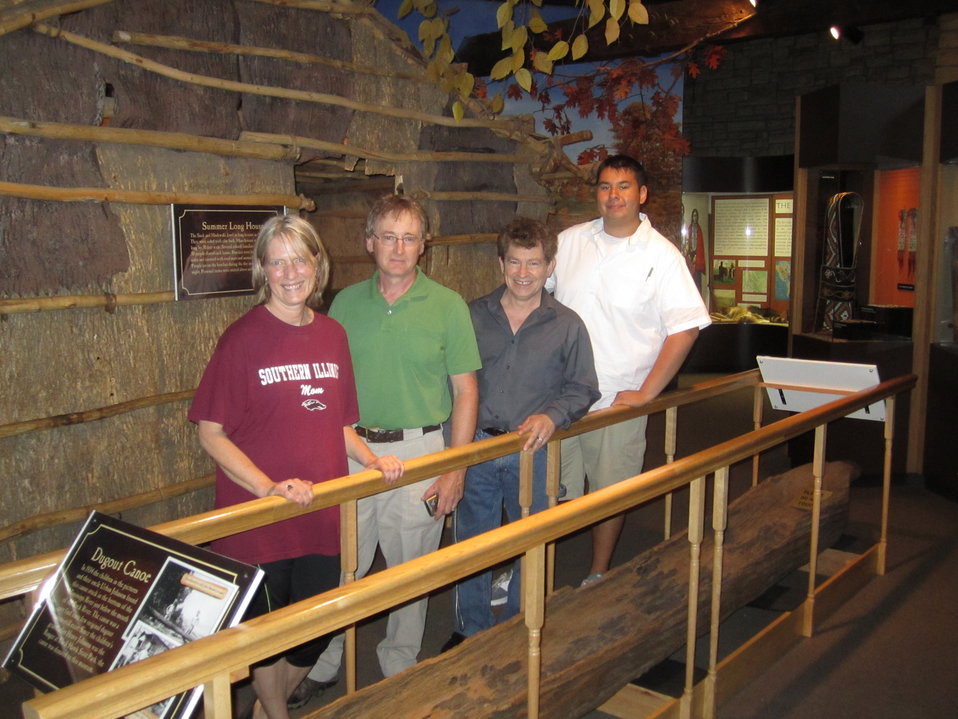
Group Photo

The service staff and Beth Carvey,Director of Hauberg Indian Musuem are standing above a traditional canoe at the Hauberg Indian Museum in Rock Island, Illinos.